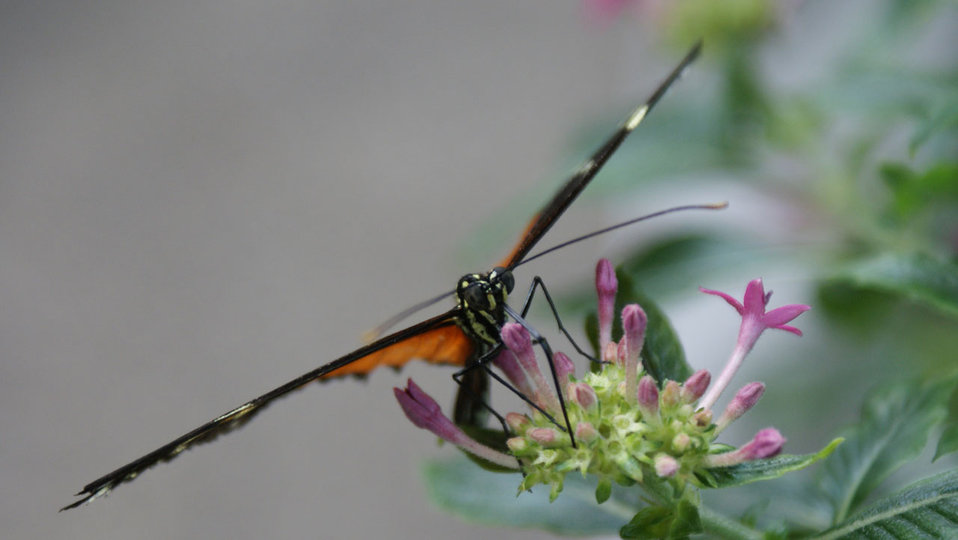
Daneus plexxippus

Monarch butterfly found in the americas and southeast asia..